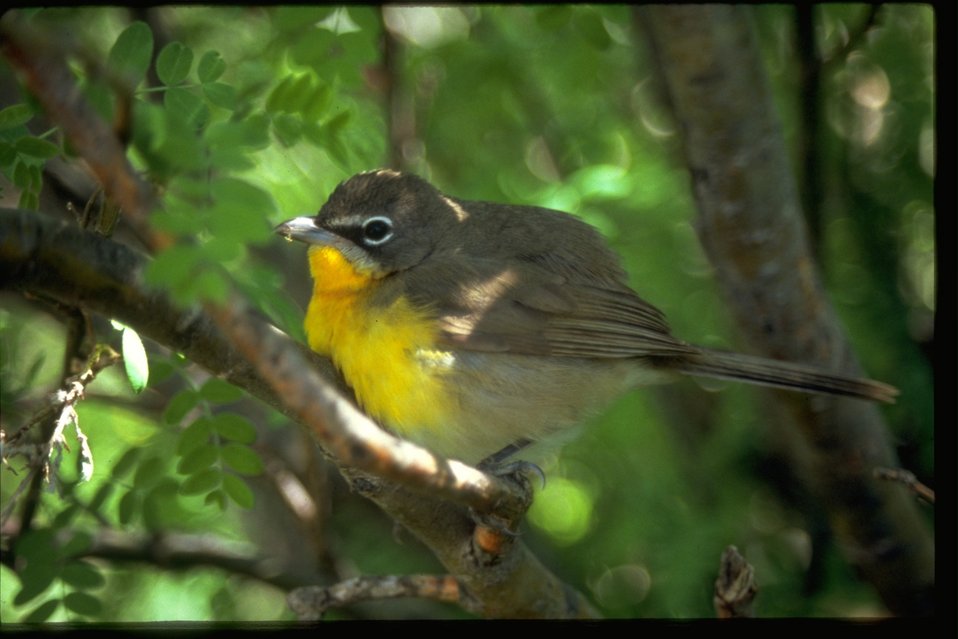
Common yellow-breasted Chat standing on small branch.